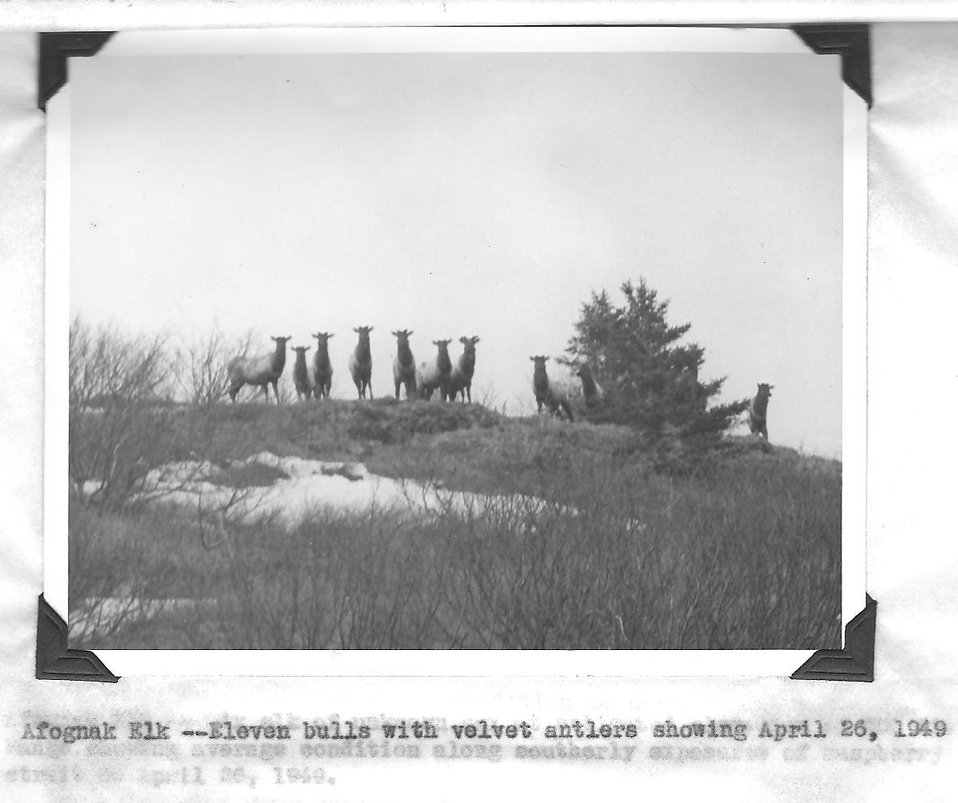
(1949) Afognak Elk

Credit: USFWS

Source and Contact: Kodiak National Wildlife Refuge